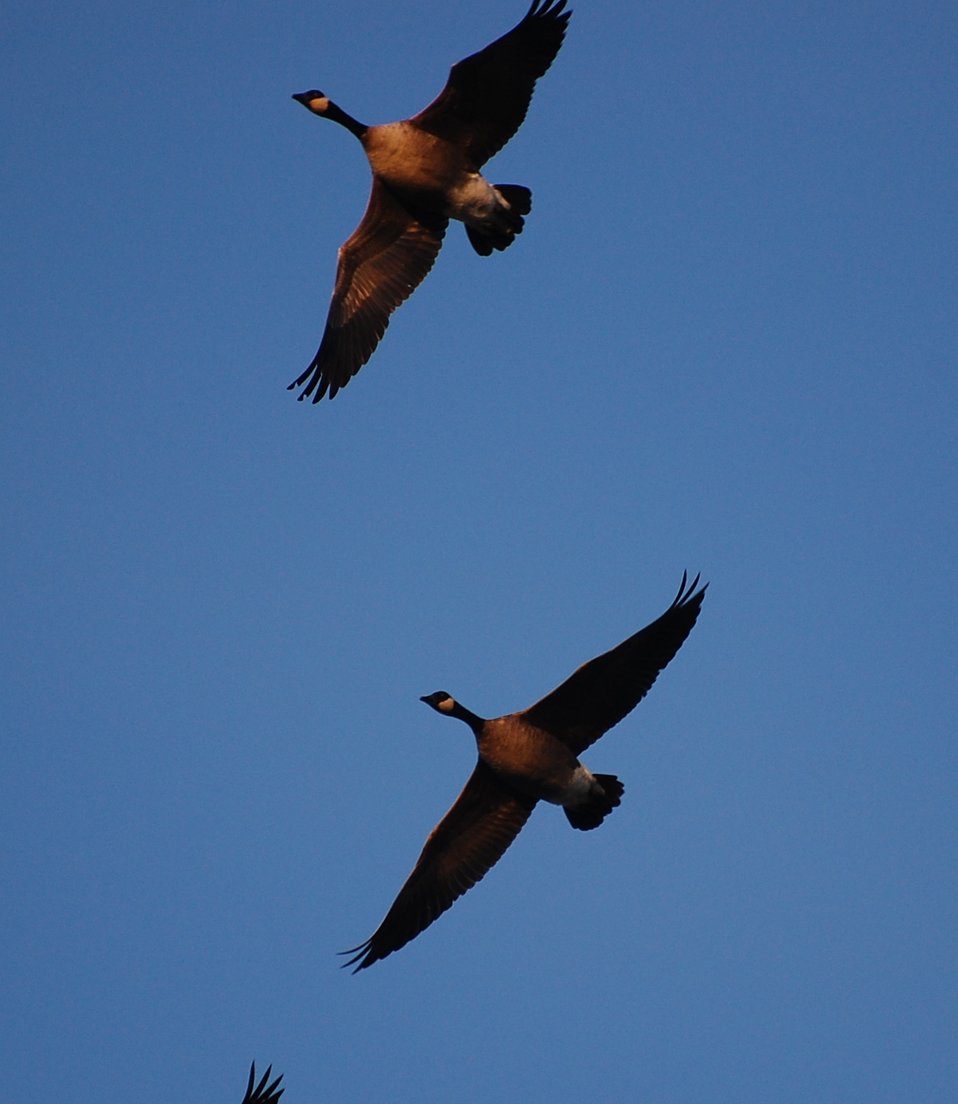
Cackling geese at Izembek Lagoon

Izembek National Wildlife Refuge